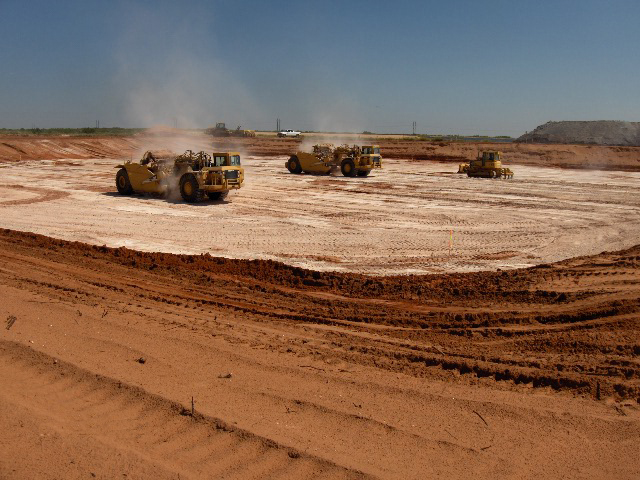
Recovery Act Accelerates Transuranic Waste Disposal Across DOE Complex

These photos show a Recovery Act-funded storm water runoff pond at WIPP during construction, left, and after construction.